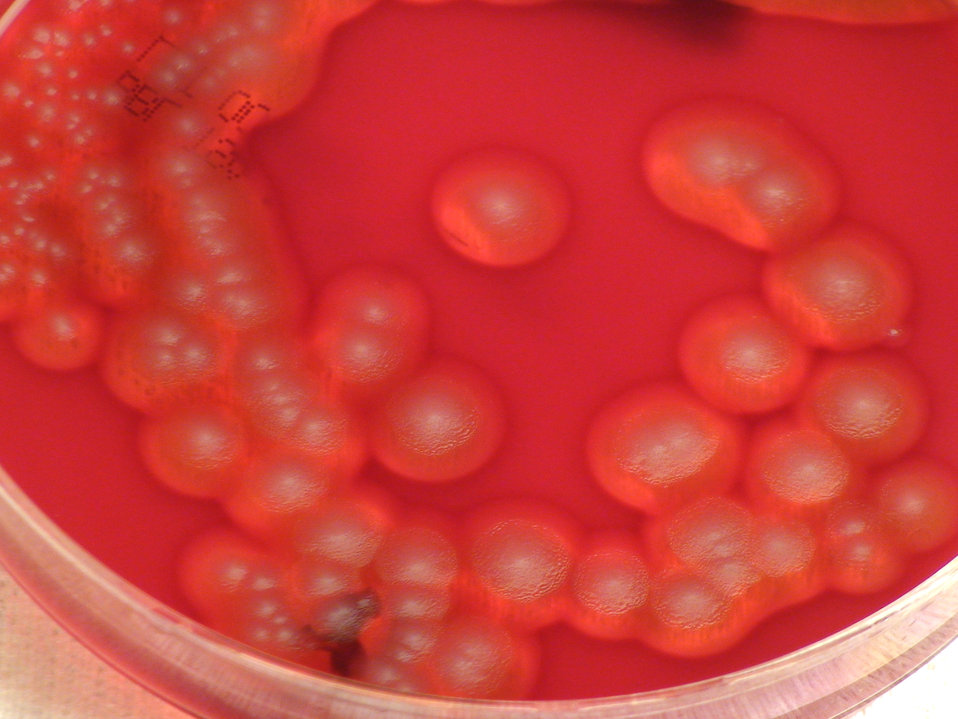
A closer view of PHIL 12377, this photograph depicts the colonial morphology displayed by Gram-positive Bacillus cereus bacteria, which was grown on a medium of sheep's blood agar (SBA), for a 24 hour time period, at a temperature of 37�C. Worthy of note, is the hemolytic reaction caused by these bacteria, as evidenced by the faded, hazy coloration surrounding these colonies. It is within this region of faded red color, that the red blood cells in the SBA medium had been lysed, or destroyed by chemical by-products produced by these organisms, thereby, liberating their intracellular hemoglobin.